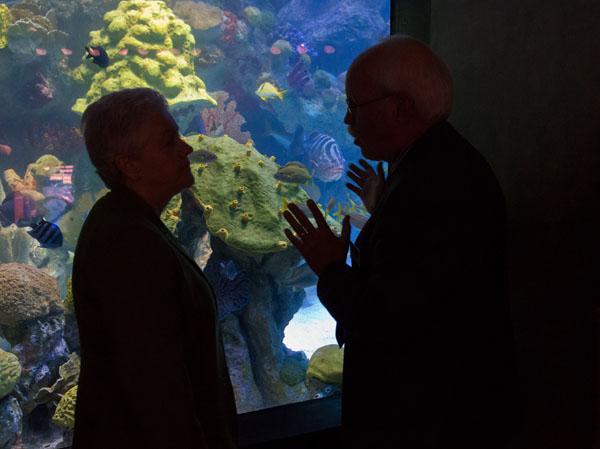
Day in the Life - Earth Day, April 22, 2014

11:41 am – Before her first event to celebrate Earth Day, McCarthy gets a quick behind-the-scenes tour of the New England Aquarium from Bud Ris, President and CEO. (3/12)